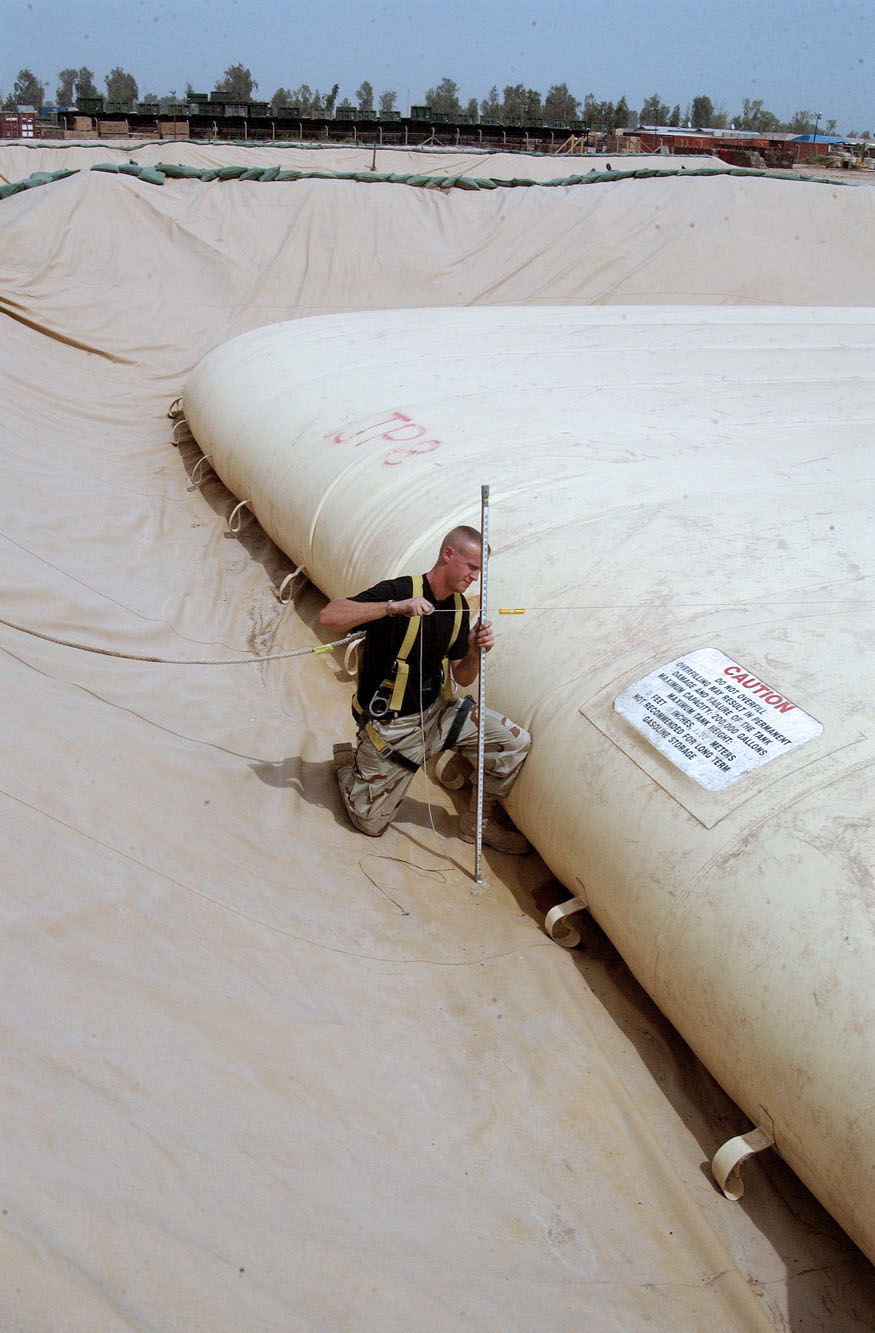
Fuels Airmen cultivate Balad farm

BALAD AIR BASE, Iraq -- Airman 1st Class Casey Culver gauges a fuel bladder for inventory here. The Airmen of the 332nd Expeditionary Logistics Readiness Squadron's fuels management flight monitor and sample fuel to ensure it is suitable for aircraft use. Airman Culver is a fuel storage operator and is deployed from Davis-Monthan Air Force Base, Ariz.